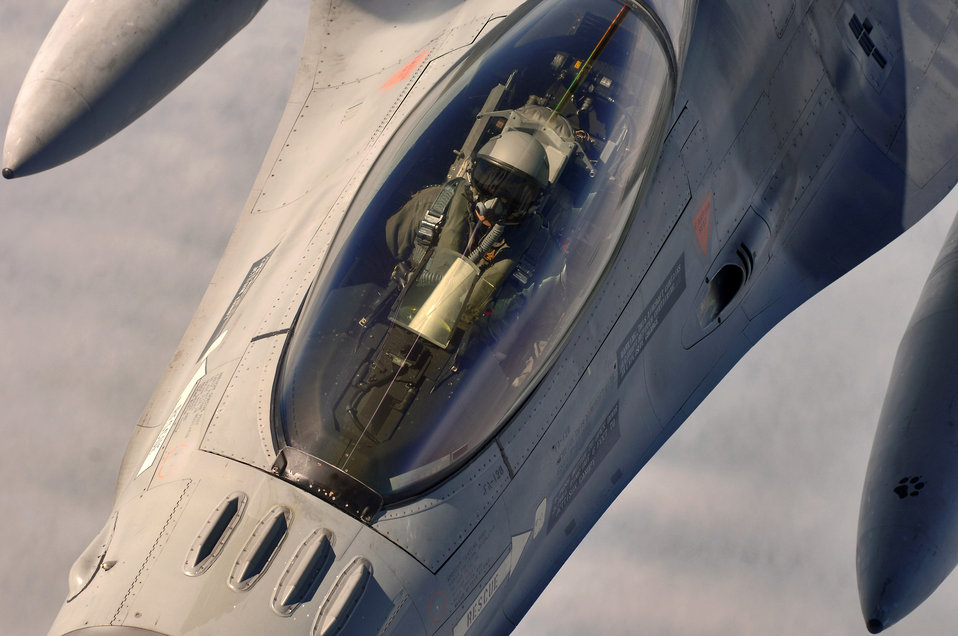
Long days, flexibility part of tanker crew's life

A Belgian F-16 Fighting Falcon flies into contact position below and behind a KC-135 Stratotanker from Royal Air Force Mildenhall, England, over the North Sea on July 25. The Belgians were participating with other NATO countries in exercise Wycombe Warrior.